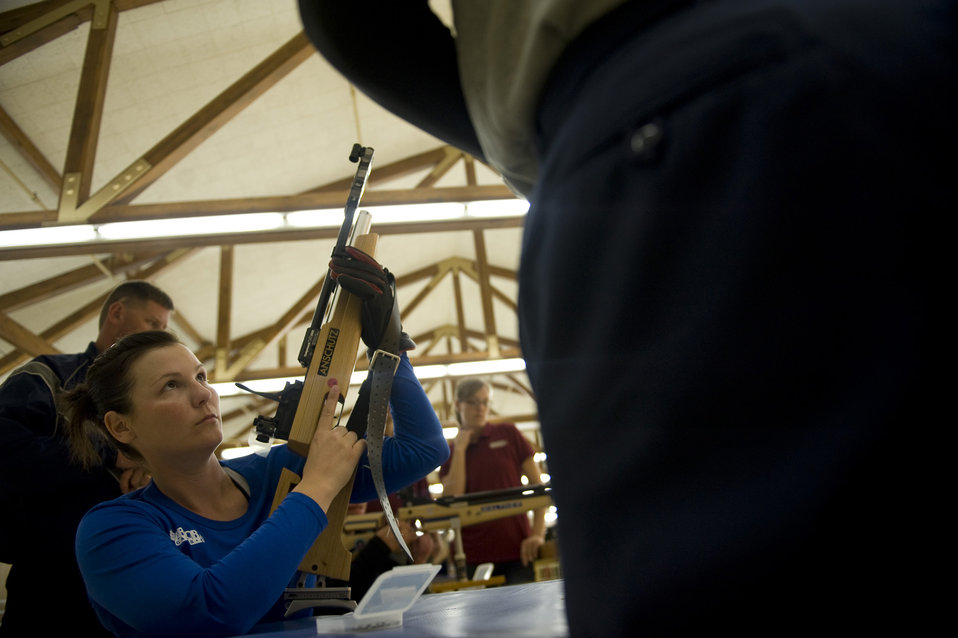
Warrior Games Airmen prepare for competition

Former Staff Sgt. Stacy Pearsall listens to her coach as she prepares to shoot during practice May 11, 2010, at the Olympic Training Center in Colorado Springs, Colo. Pearsall along with 16 other Air Force athletes are competing in the inaugural Warrior Games through May 14, 2010, in Colorado Springs.